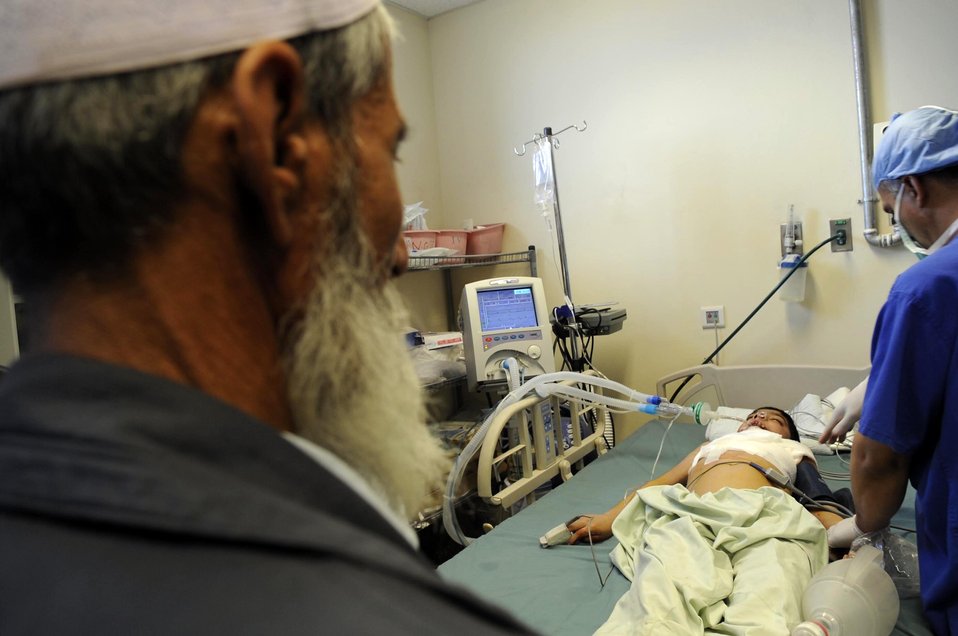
American, Afghan docs begin surgical process for young burn victims

Abdul Ghafer waits for his son Abdul Rahman to recovery after having surgery on his neck March 1, 2010 at the Kandahar Regional Military Hospital in Afghanistan. The patient only 13 years old burned himself cooking five months ago. Col. Barry Steinberg assisted in the surgery.